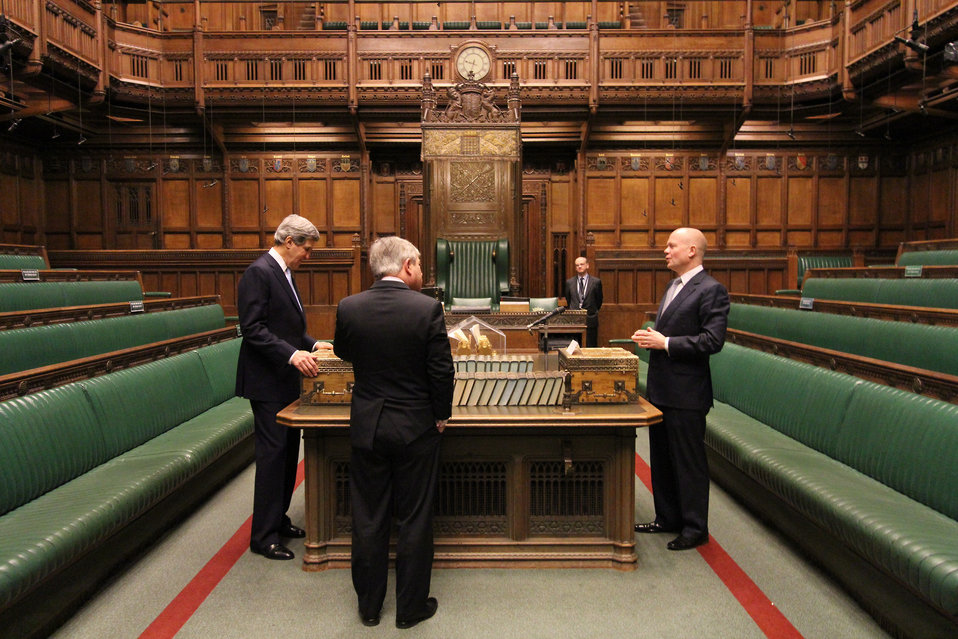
Secretary Kerry in the UK House of Commons Chamber

U.S. Secretary of State John Kerry, House of Commons Speaker John Bercow, and UK Foreign Secretary William Hague tour the House of Commons chamber at UK Parliament in London, United Kingdom, February 25, 2013.